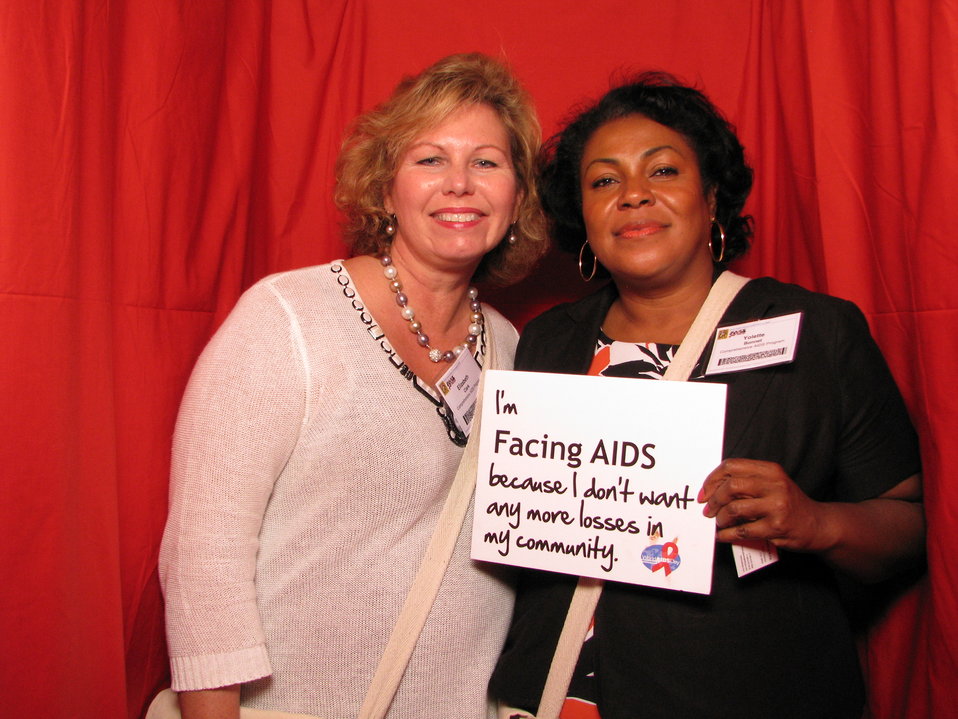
I'm FACING AIDS because I don't want any more losses in my community.

From the AIDS.gov photo booth at the U.S. Conference on AIDS, September 2010 (Orlando, FL).